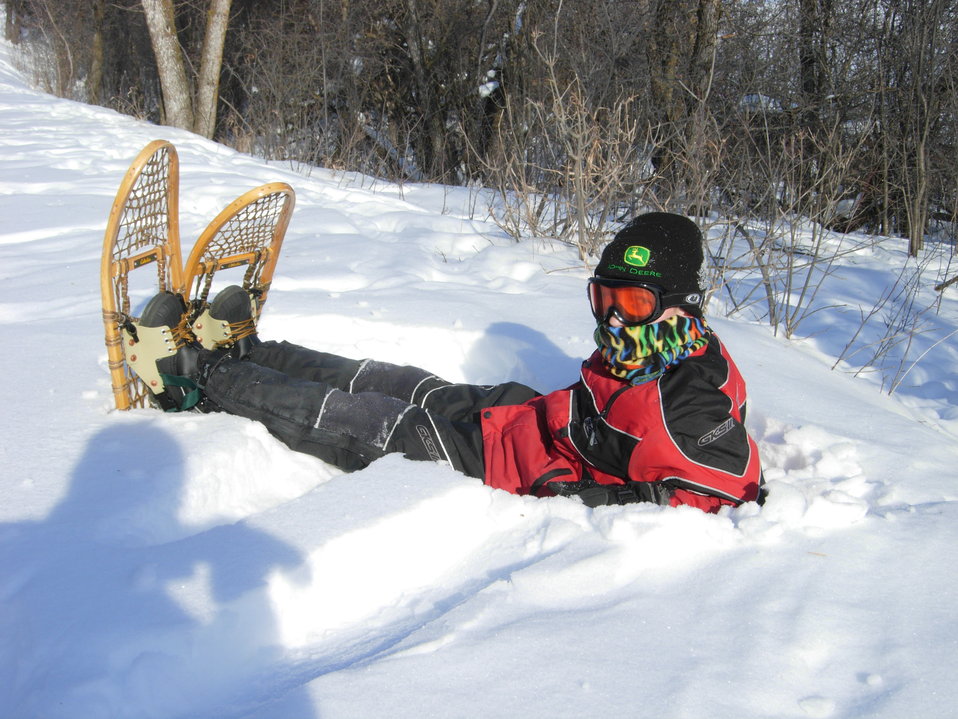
Des Lacs National Wildlife Refuge

Snowshoeing is one of the many seasonal activities available at Des Lacs NWR. In this photo, young snowshoer, Dalton Petersen, shows us why so many people 'dig' the snowshoeing program!